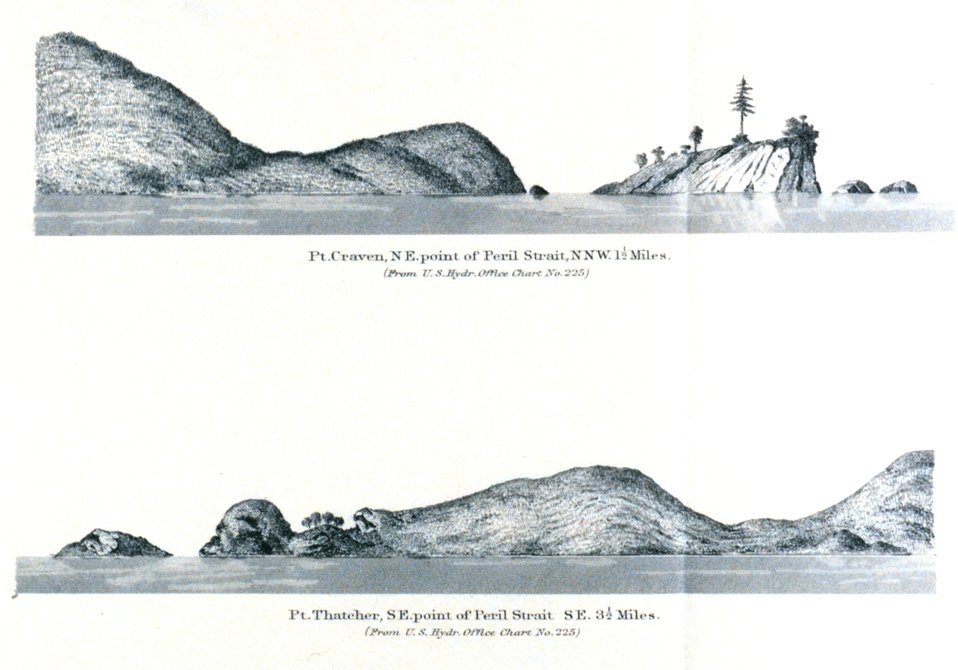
Point Craven. Point Thatcher. In: Pacific Coast Pilot Alaska Part I 1883. P. 166. Library call number VK943 .N3 1883.